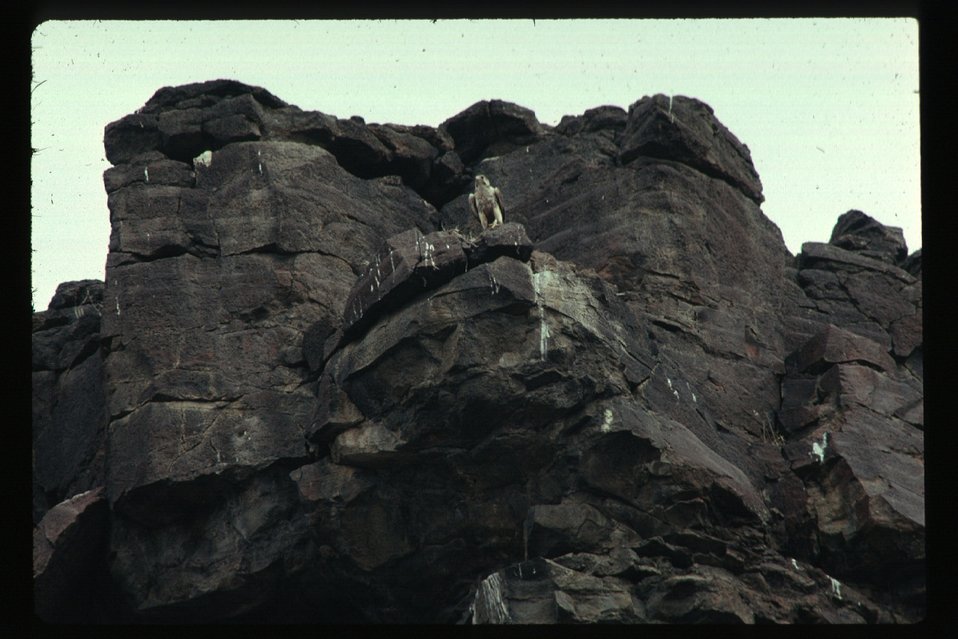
Prairie Falcon on Cliff Birds of Prey National Conservation Area BOP NCA Owyhee Field Office LSRD Lower Snake River District